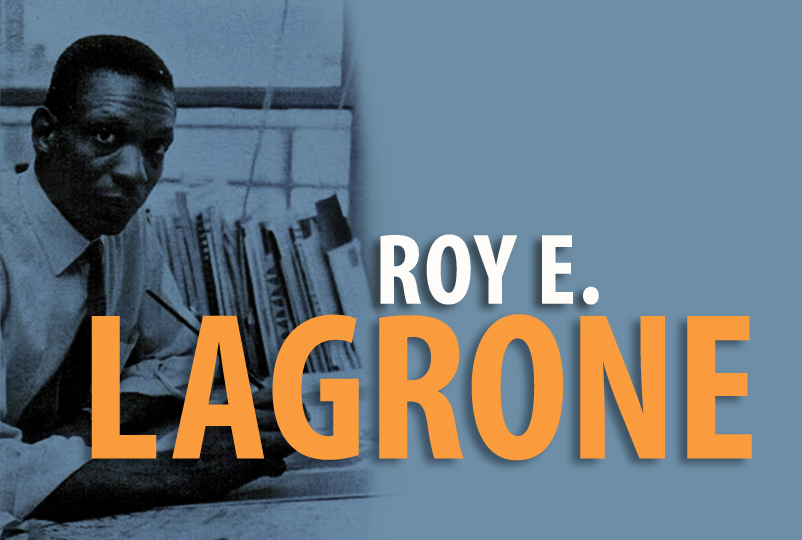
Roy E. Lagrone